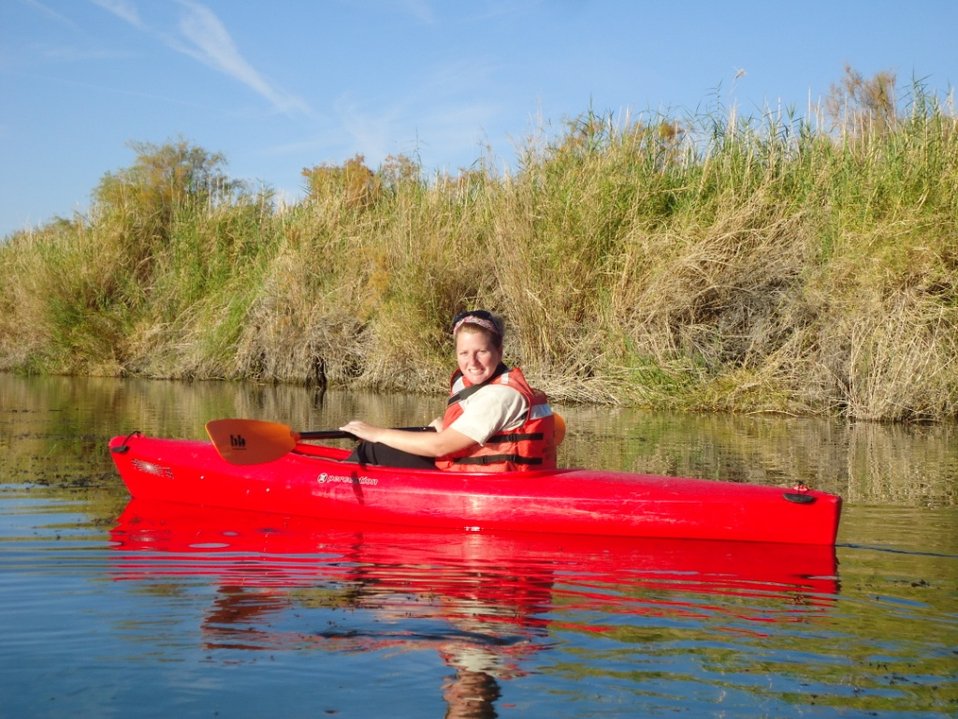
Kelly Lockman wildlife monitoring in kayak

Arizona National Wildlife Refuge Complex
2011 Wilderness Fellow Kelly Lockman wildlife monitoring by kayak